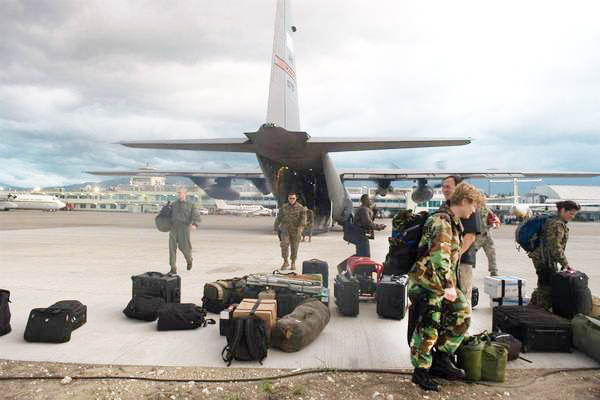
Ohio ANG supports Haiti relief

Airmen from the Ohio Air National Guard's 179th Airlift Wing unload supplies from their C-130 Hercules Jan. 13, 2010, in Port-au-Prince, Haiti, following a devastating Jan. 12 earthquake. Two C-130s and five crews from the 179th AW, home-based in Mansfield, Ohio, are supporting relief efforts.